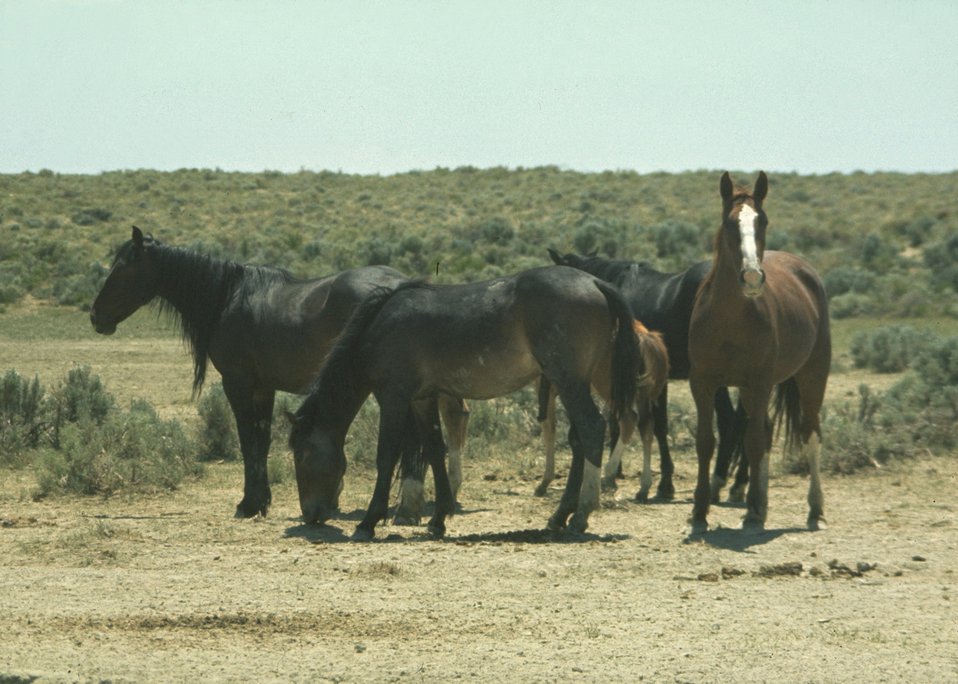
Wild horses.